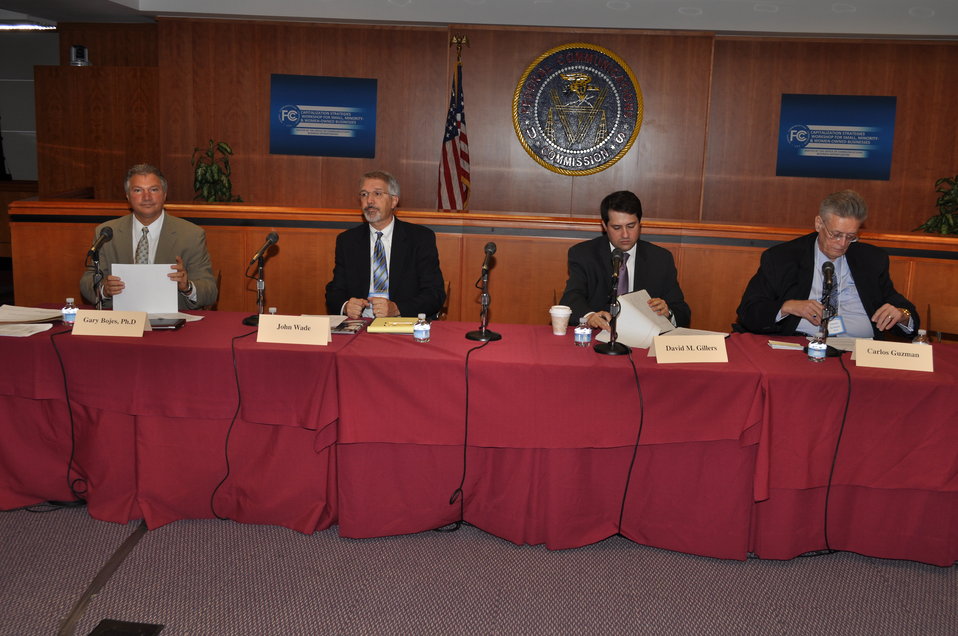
Capitalization Strategies

Workshop for small, minority and women owned businesses. Hosted by the Office of Communications Business Opportunities